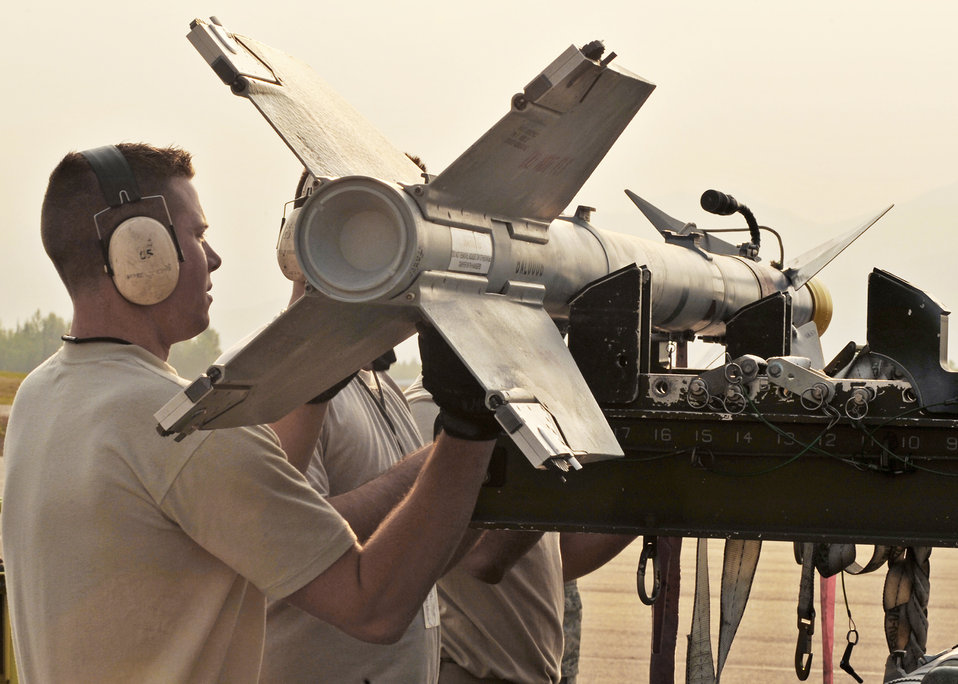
Practice, practice makes perfect

Airman 1st Class Daniel Tinnel prepares to load an air-to-air missile onto an F-15 Eagle during a load crew competition July 10 at Elmendorf Air Force Base, Alaska. The purpose of the competition is to demonstrate and test quick turn weapon loads. Airman Tinnel is with the 3rd Aircraft Maintenance Squadron.